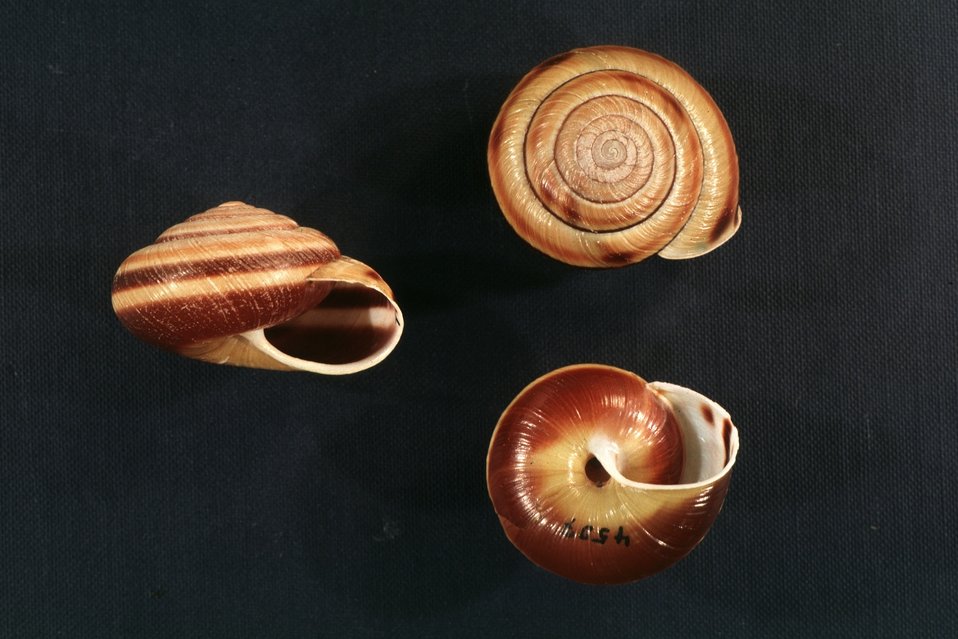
Yellow-based sideband (Monadenia fidelis ochromphalus).